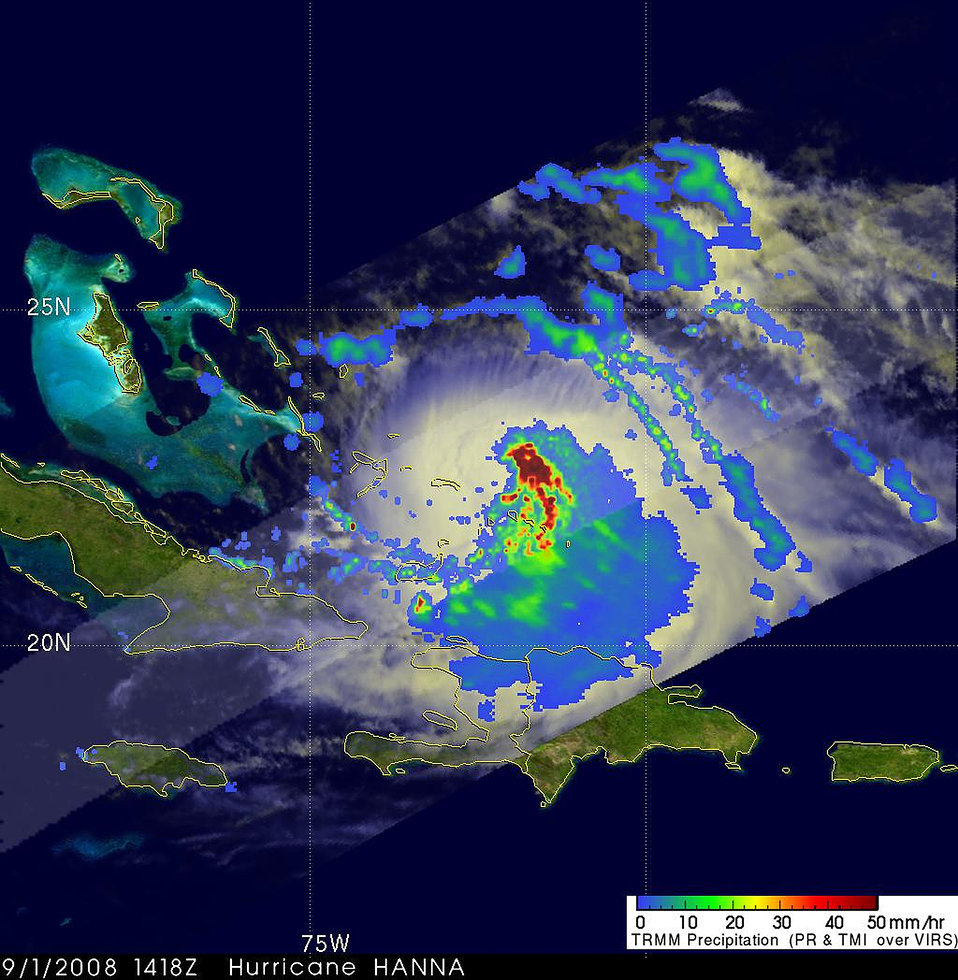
TRIMM Captures Hanna: